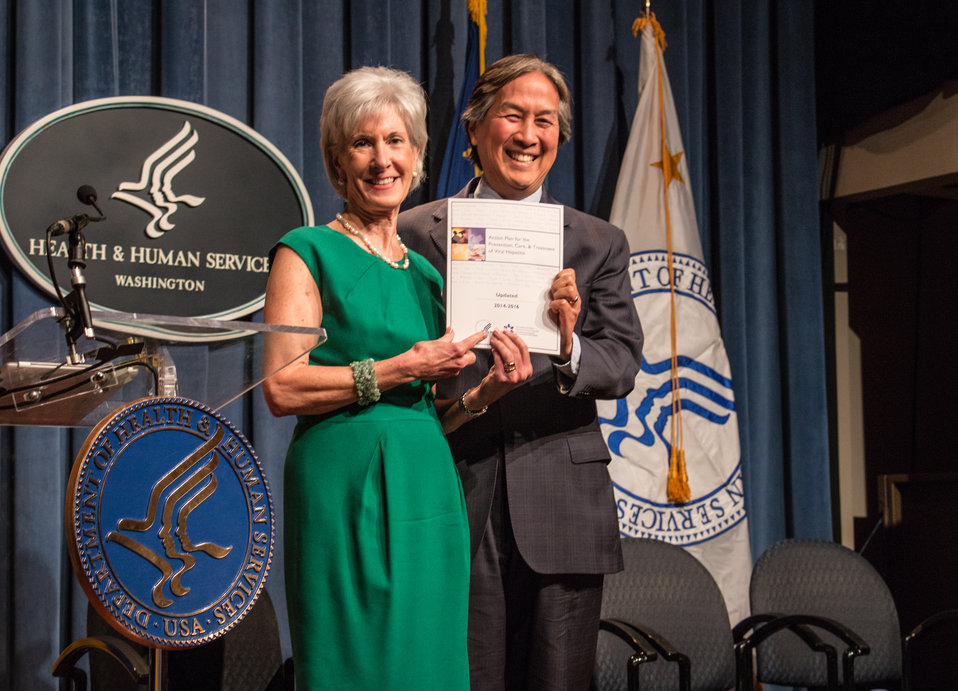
VHAP Launch (173 of 511)